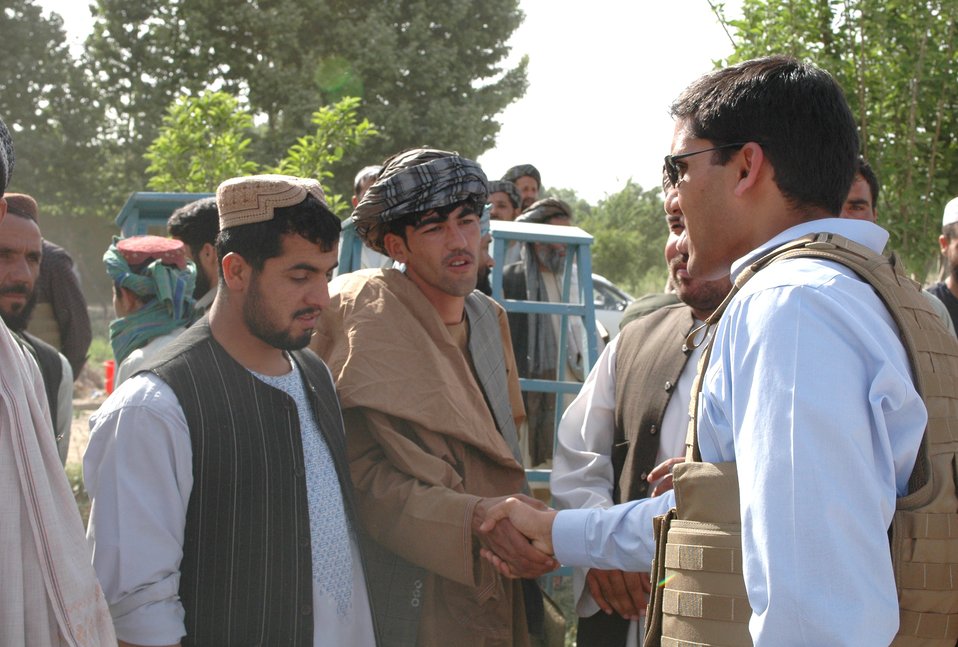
Dr Shah Visits Argandab April 10, 2010